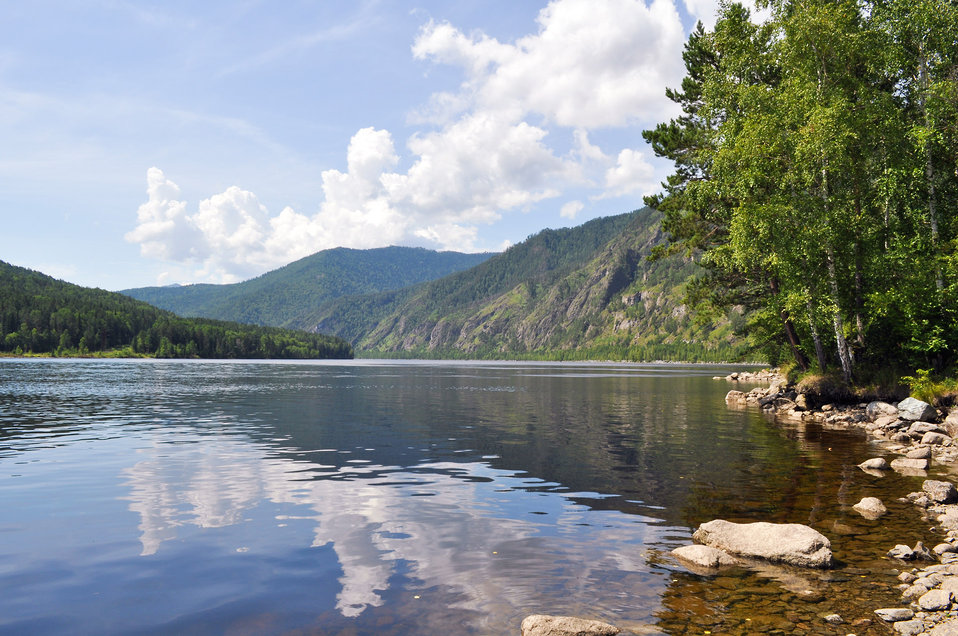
Summer landscape with river

River bank against the mountains and blue sky with beautiful clouds.